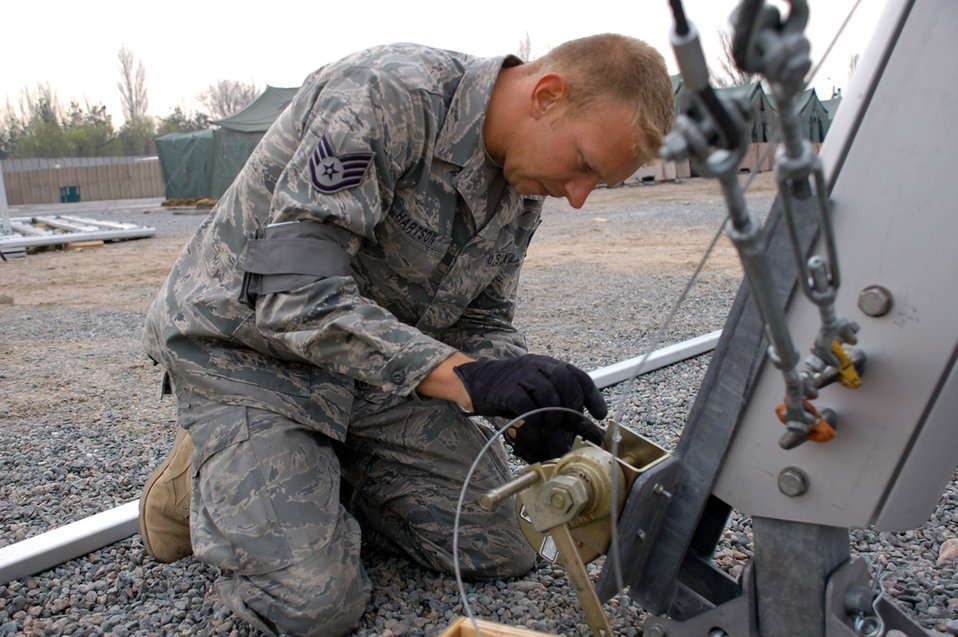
BEAR builds new quarters for forces at Manas

Staff Sgt. Wynn Hartson attaches cables to a wench assembly to prepare the vinyl fabric, which will be pulled up and over the frame of a 4,000-square foot dome shelter being constructed March 30 at Manas Air Base, Kyrgyzstan. The tents are being erected in preparation for the increased number of coalition personnel transiting through Manas AB to and from Afghanistan. Sergeant Hartson is assigned to a nine-person Basic Expeditionary Airfield Resources team deployed to Southwest Asia. He is deployed from Holloman Air Force Base, N.M.